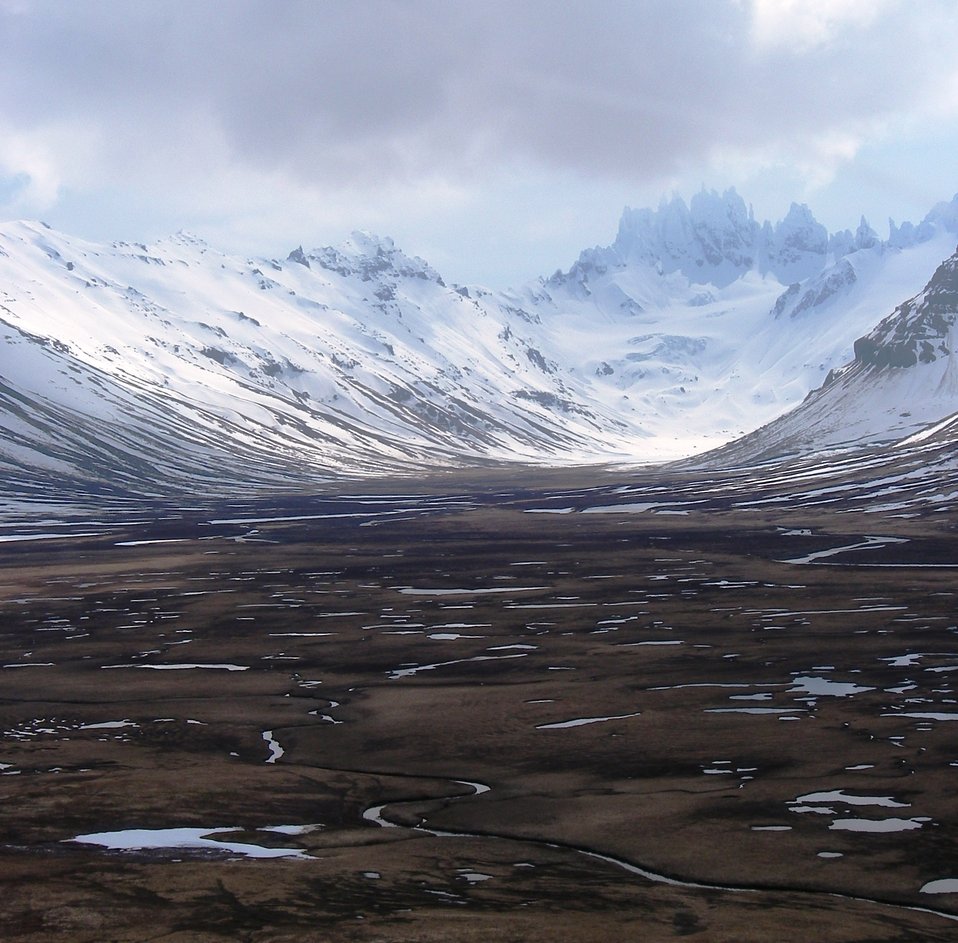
Izembek Wilderness

Joshua Green area, Izembek Wilderness, Izembek National Wildlife Refuge
Photo by Kristine Sowl,
USFWS, Public Domain